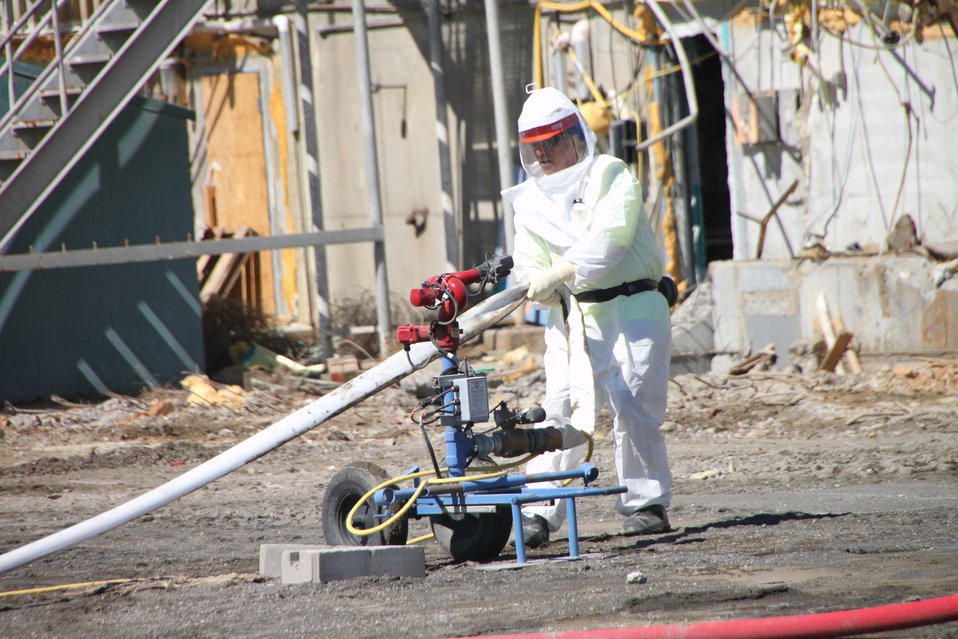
224-U worker at demolition site

Workers demolish the 224-U facility, one of five ancillary facilities adjacent to Hanford’s U Plant.